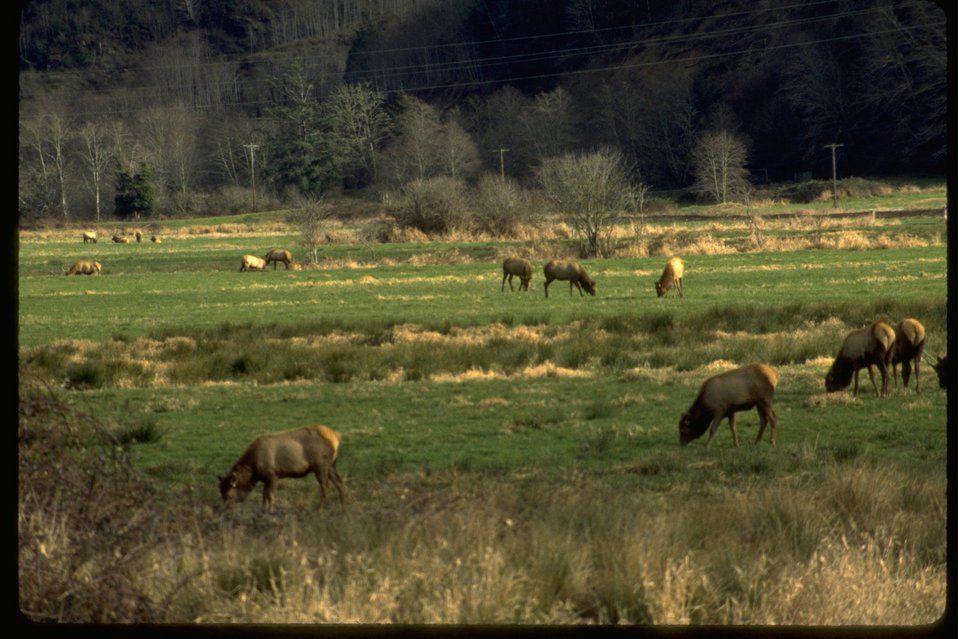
Elk at Dean Creek.